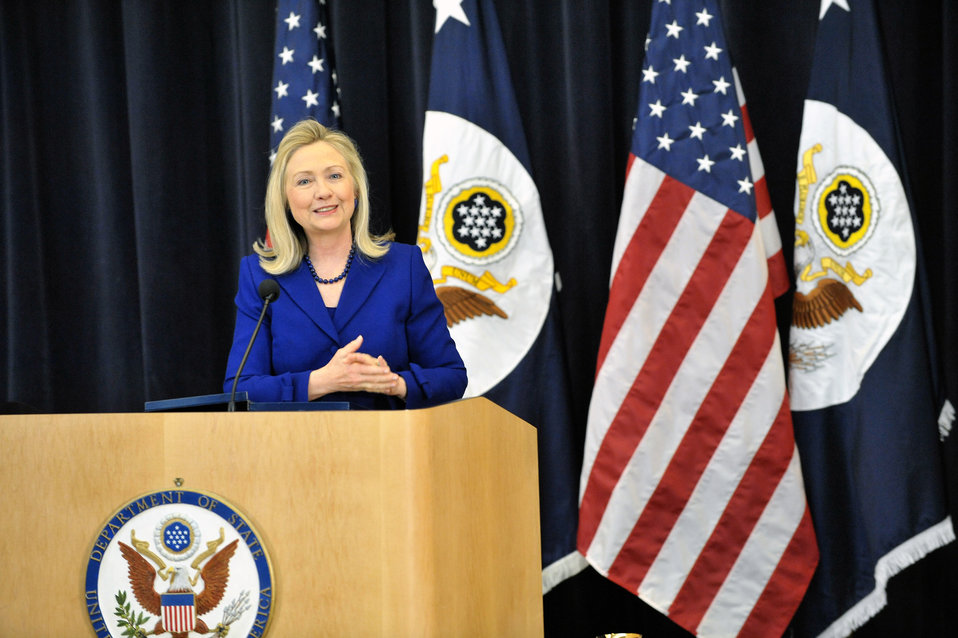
Secretary Clinton Holds a Town Hall Meeting at the Department of State

U.S. Secretary of State Hillary Rodham Clinton holds a town hall meeting at the Department of State in Washington, D.C. on January 26, 2012.